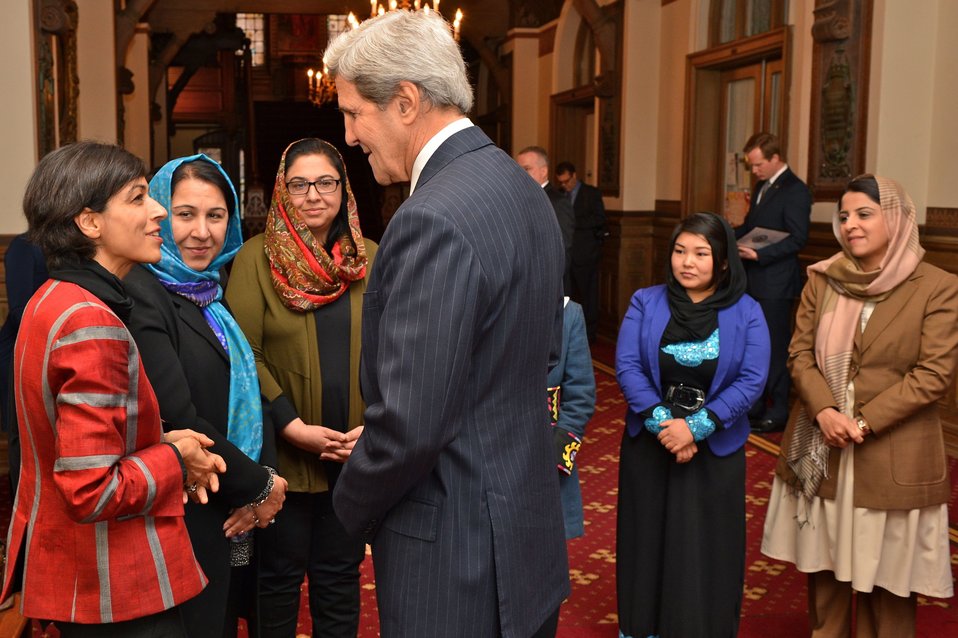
Secretary Kerry Meets With Afghan Women

U.S. Secretary of State John Kerry meets with Afghan women at the Georgetown University Symposium “Advancing Afghan Women: Promoting Peace and Progress in Afghanistan” co-hosted by Former U.S. Secretary of State Hillary Clinton and Former First Lady Laura Bush, at Georgetown University in Washington, D.C., on November 15, 2013.